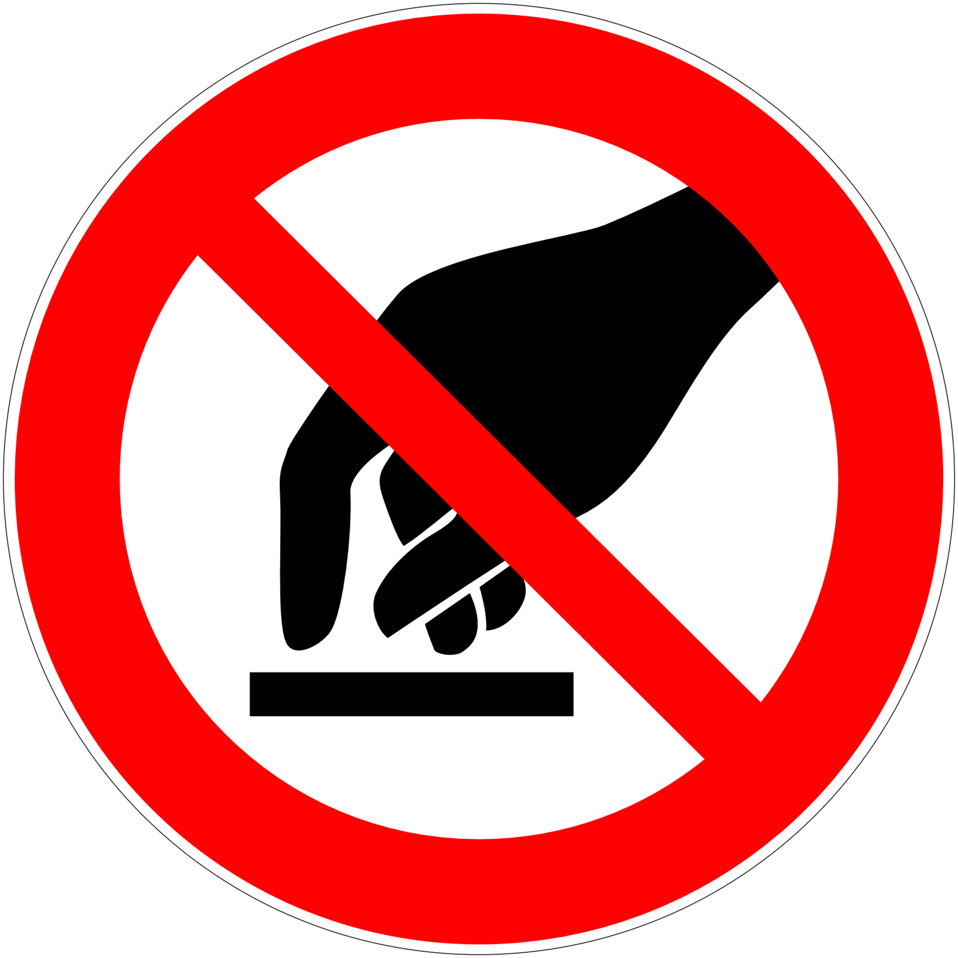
Deutsch: Berühren verboten, Verbotszeichen D-P008 nach DIN 4844-2 Do not touch, prohibition sign D-P008 according to German standard DIN 4844-2